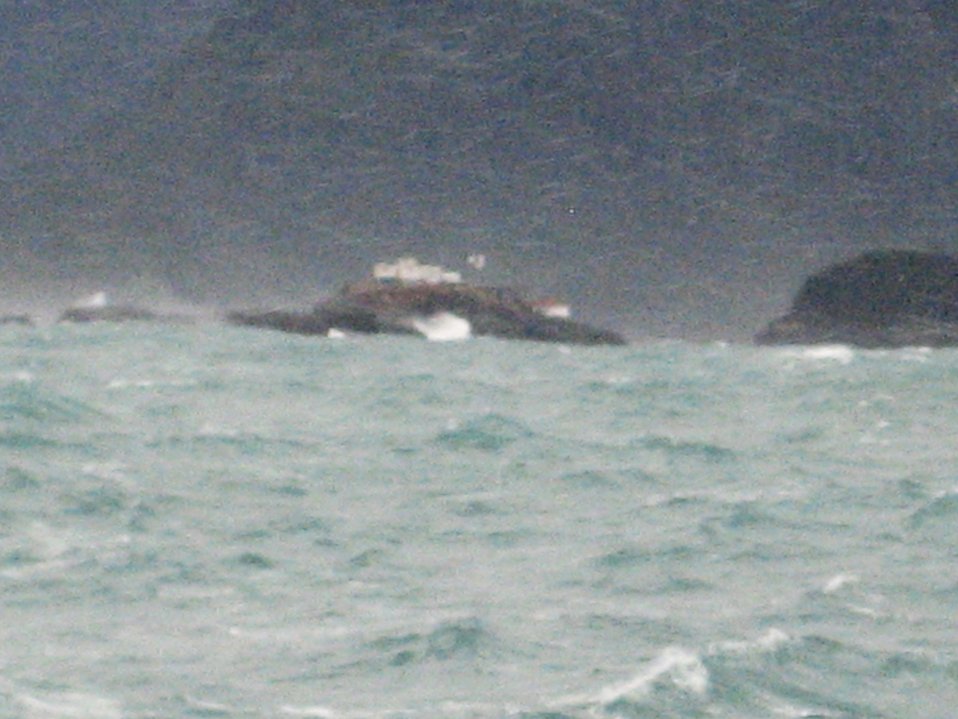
Cape Spencer Lighthouse seen in the distance on a stormy day. Entering Cross Sound from the Gulf of Alaska . The blue-green water is from glacial melt-water from Glacier Bay.